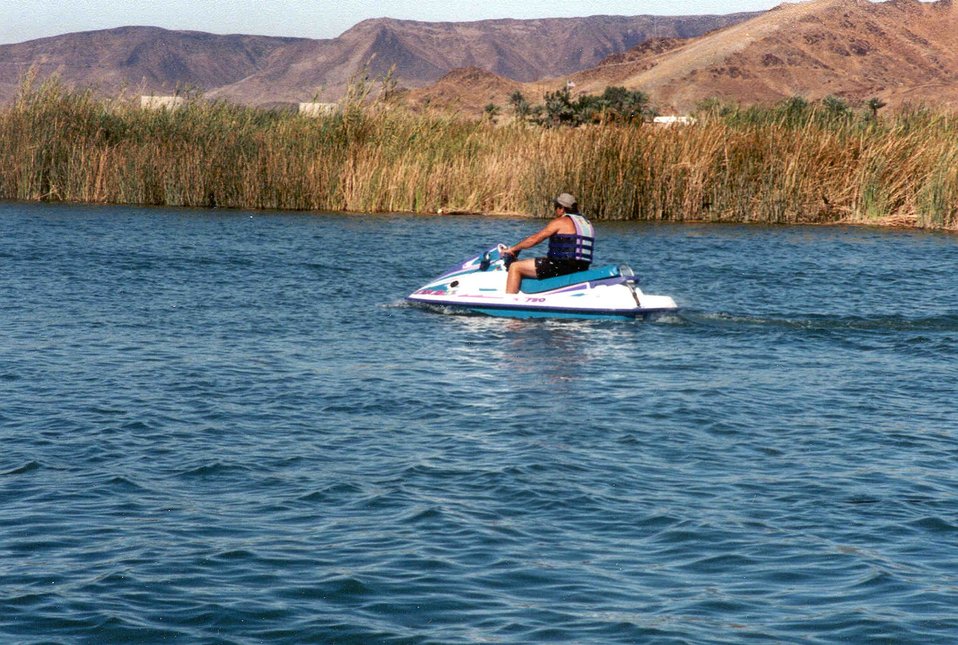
A jet skier in the "no wake" Zone at Squaw Lake.